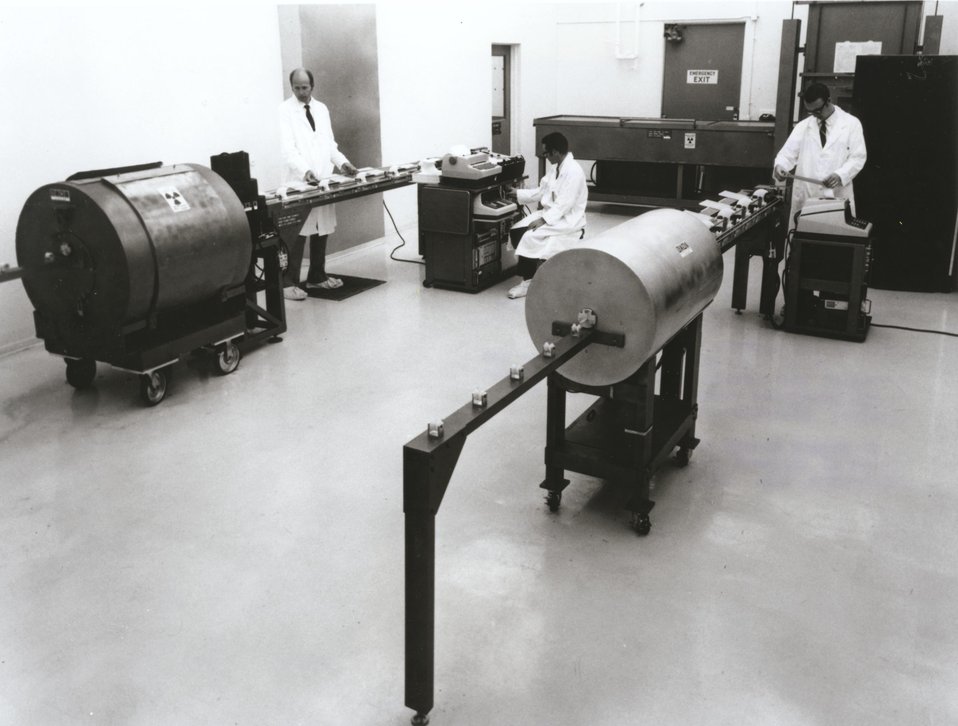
As part of the FFTF vendor fuel fabrication, Hanford Engineering Development Lab has placed in operation at Los Alamos Scientific Lab-developed fissile assay rod scanner (on left). c.1974